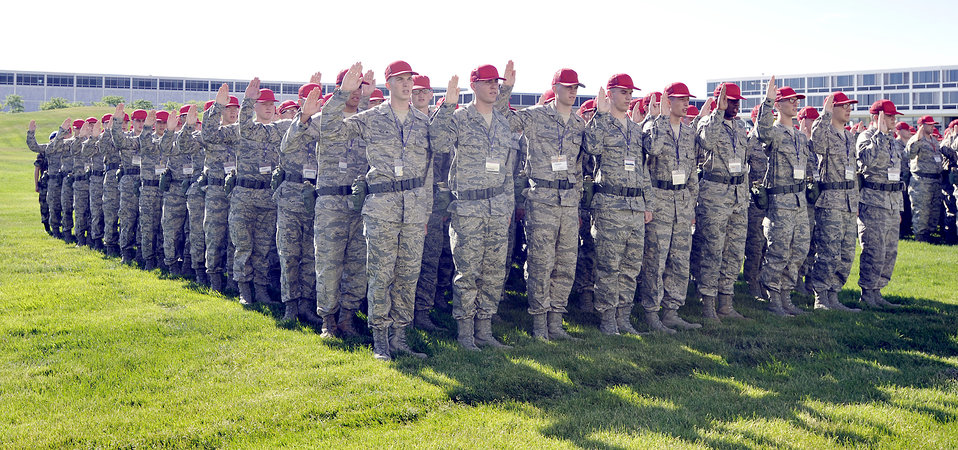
Air Force Academy's Class of 2014

Basic cadets with the Class of 2014 swear to support and defend the Constitution of the United States and faithfully discharge their duties as cadets during a ceremony June 25, 2010, at the U.S. Air Force Academy, in Colorado Springs, Colo.